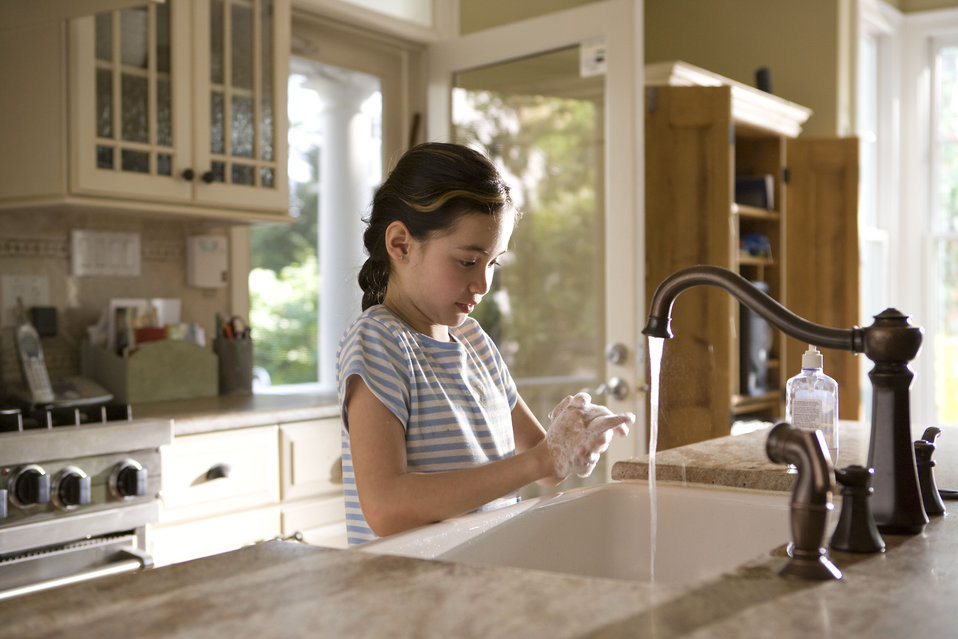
This young girl was shown in the process of properly washing her hands at her kitchen sink, briskly rubbing her soapy hands together under fresh running tap water, in order to remove germs, and contaminants, thereby, reducing the spread of pathogens, and her ingestion of environmental chemicals or toxins. Children are taught to recite the Happy Birthday song, during hand washing, allotting enough time to completely clean their hands.